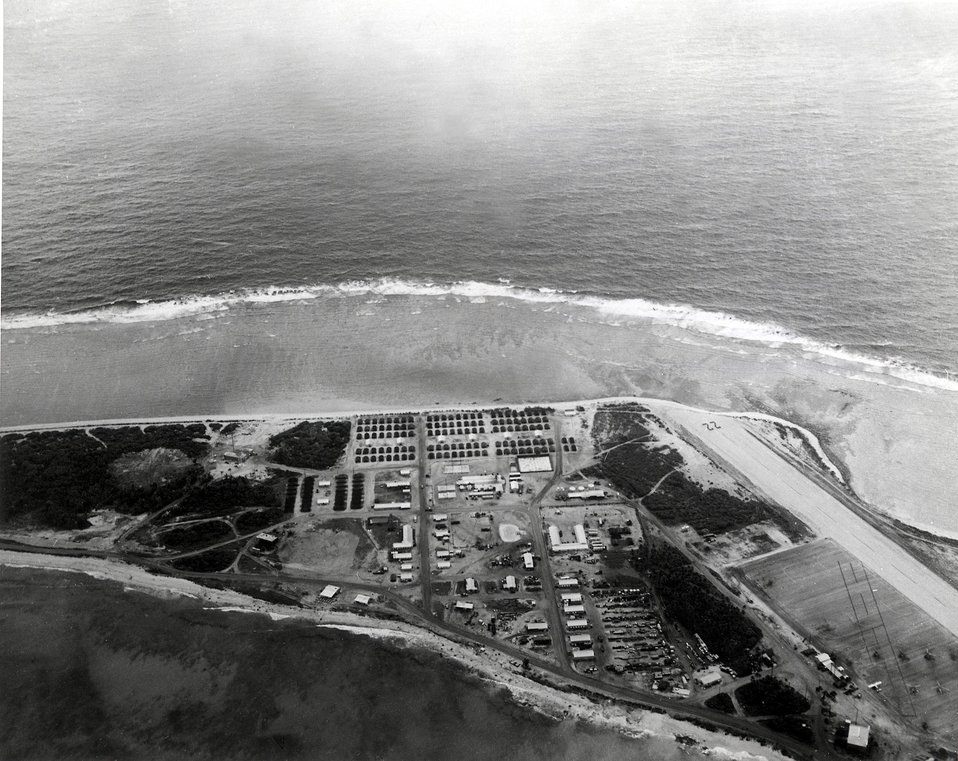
Enyu, one of the Bikini Atoll islands where comprehensive program to return natives to their homes after US seized for nuclear tests.